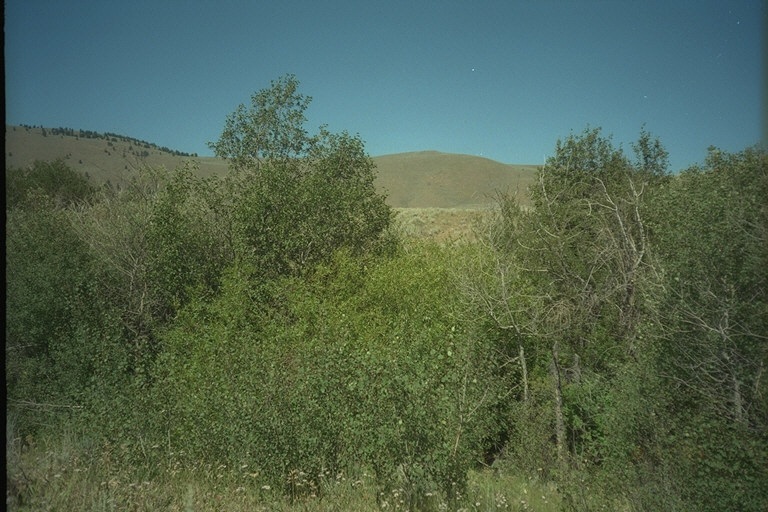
Riparian area Public Lands Salmon Field Office UCSC Upper Columbia Salmon Clearwater District